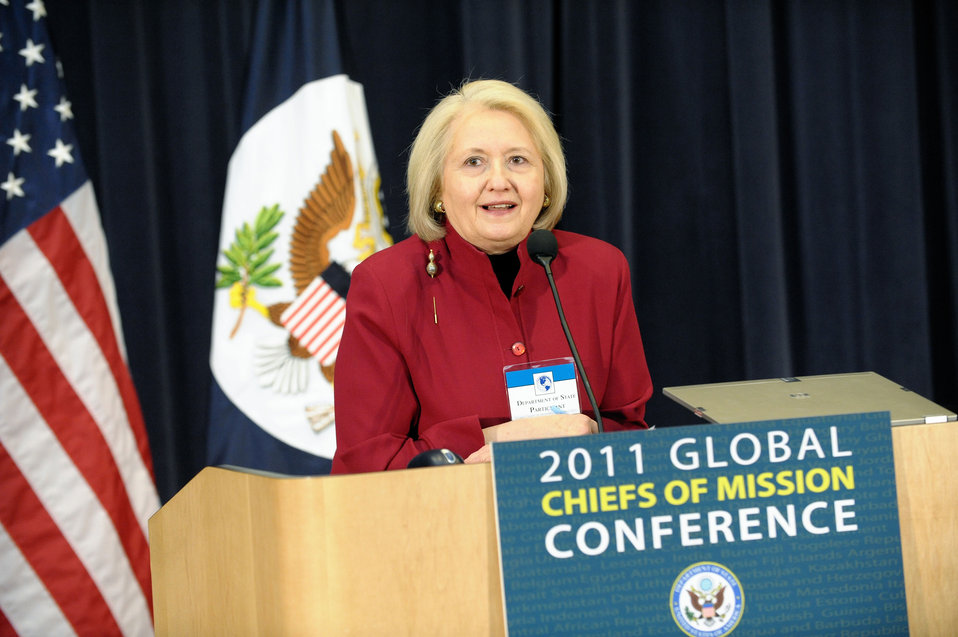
Ambassador Verveer Delivers Remarks

Ambassador-at-Large for Global Women's Issues Melanne Verveer delivers remarks at the 2011 Global Chiefs of Mission Conference at the U.S. Department of State in Washington, D.C., on February 2, 2011.